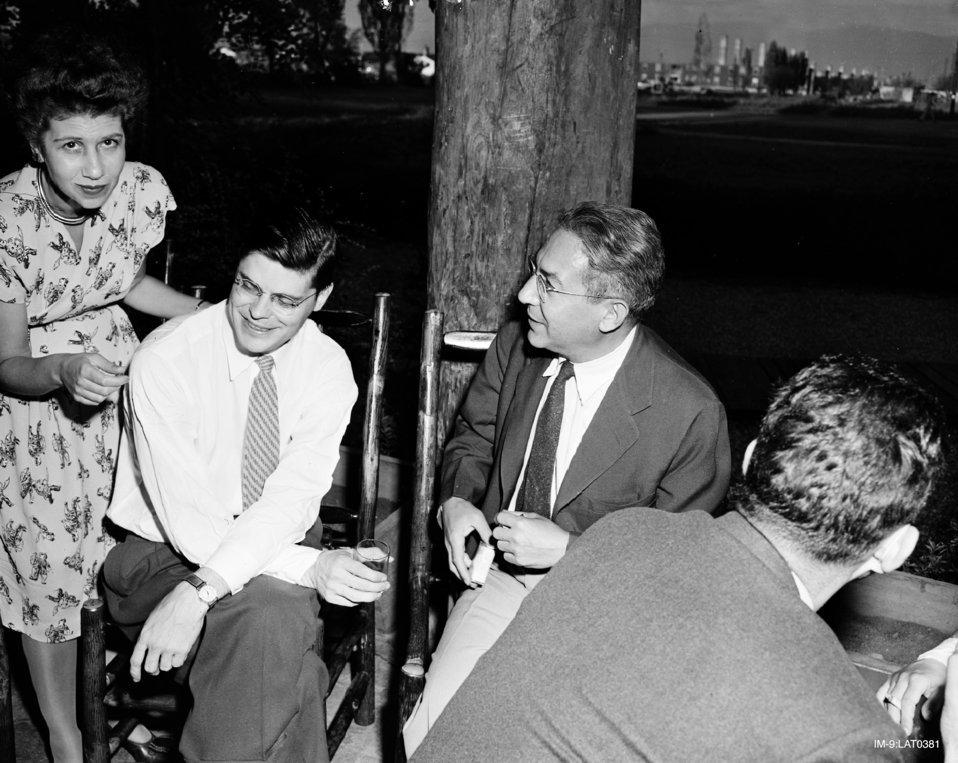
THE WILSONS ( JANE AND ROBERT) AND RABI